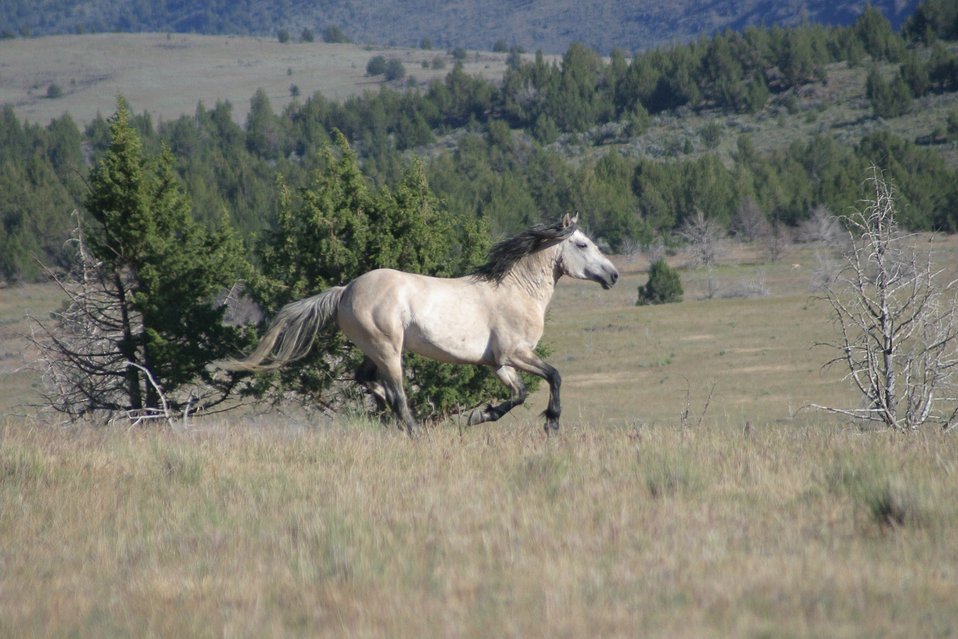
Wild Horse(s) in the Kiger Wild Horse Herd Management Area.